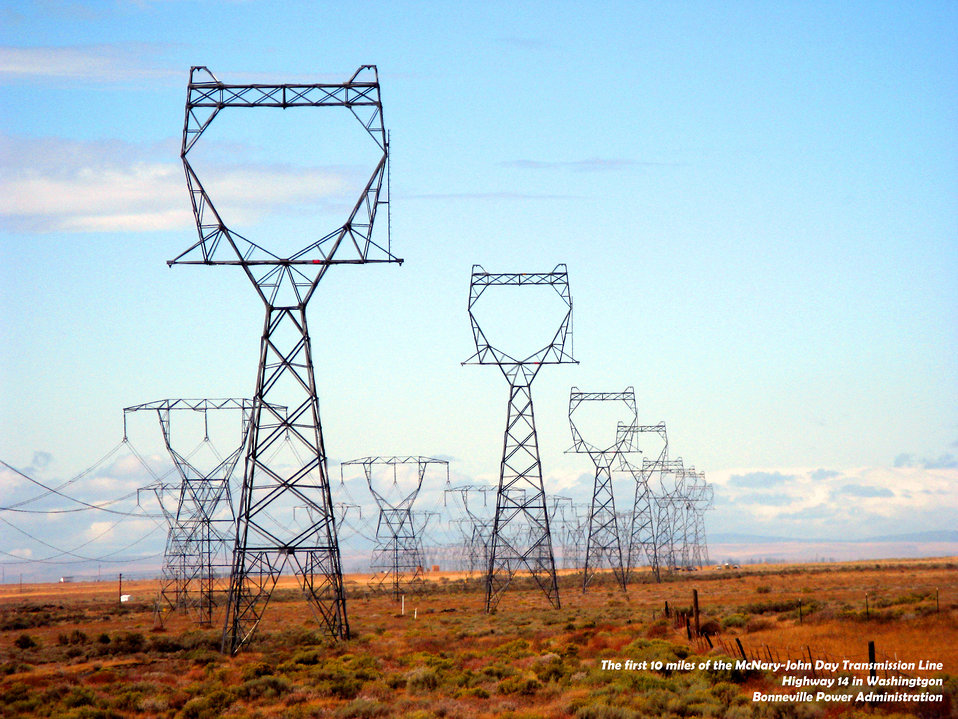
Bonneville Power Administration

The first 10 miles of the McNary-John Day Transmission Line by Highway 10 in Washington State.